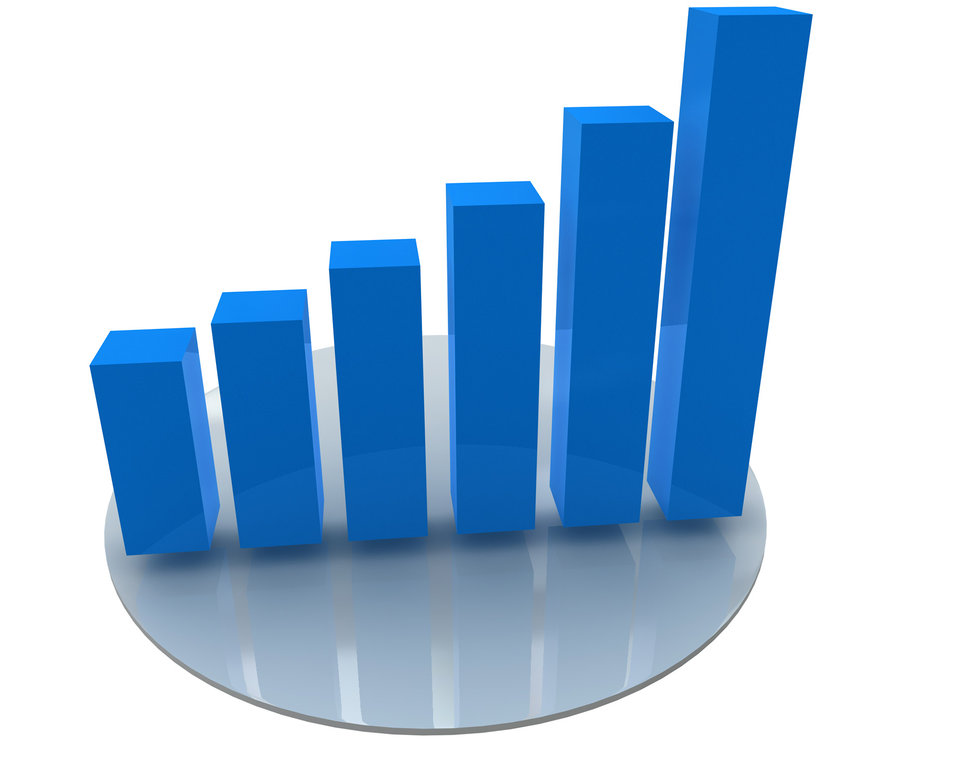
Business chart

Business bar chart in 3d.